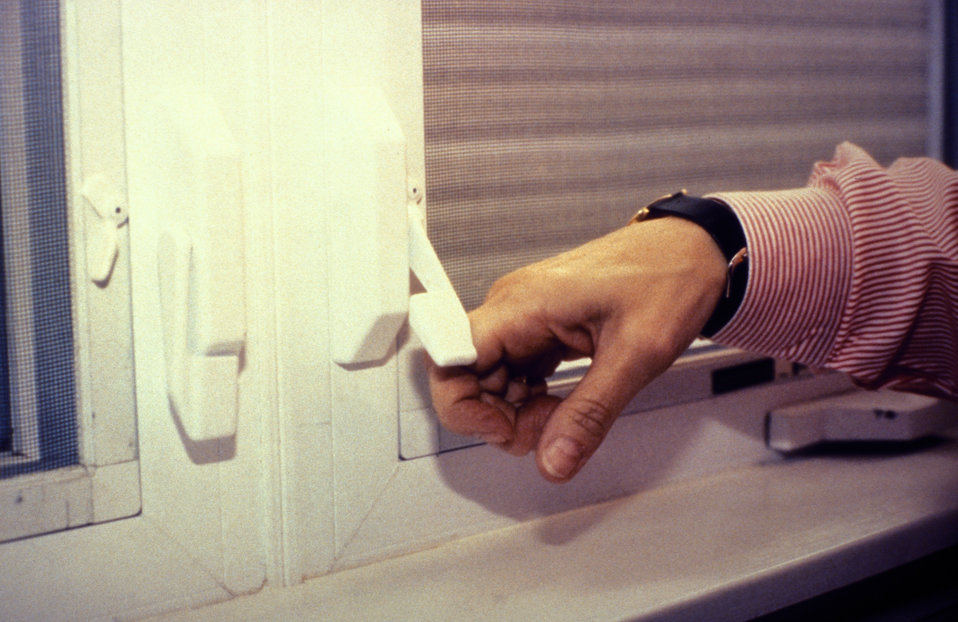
The adult's hand in this 1995 image was shown opening a casement window lock, which was operated by an up and down movement of a lever with an easy switch-like motion. The latch was located at the bottom of the window's casement at a height, which made it easily accessible by those seated in a wheelchair, or who were very short. Considering mobility-impaired demographic groups when determining the placement of knobs, switches, locks, and controls in general, as well as their designs facilitates the usage of such devices by the widest range of endusers possible.